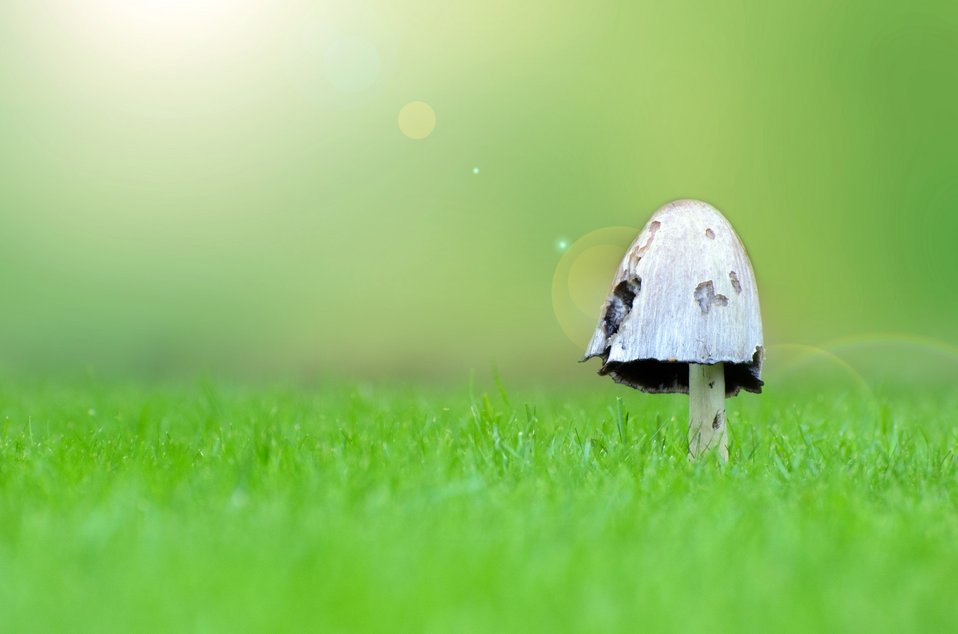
Mushroom on the grass.